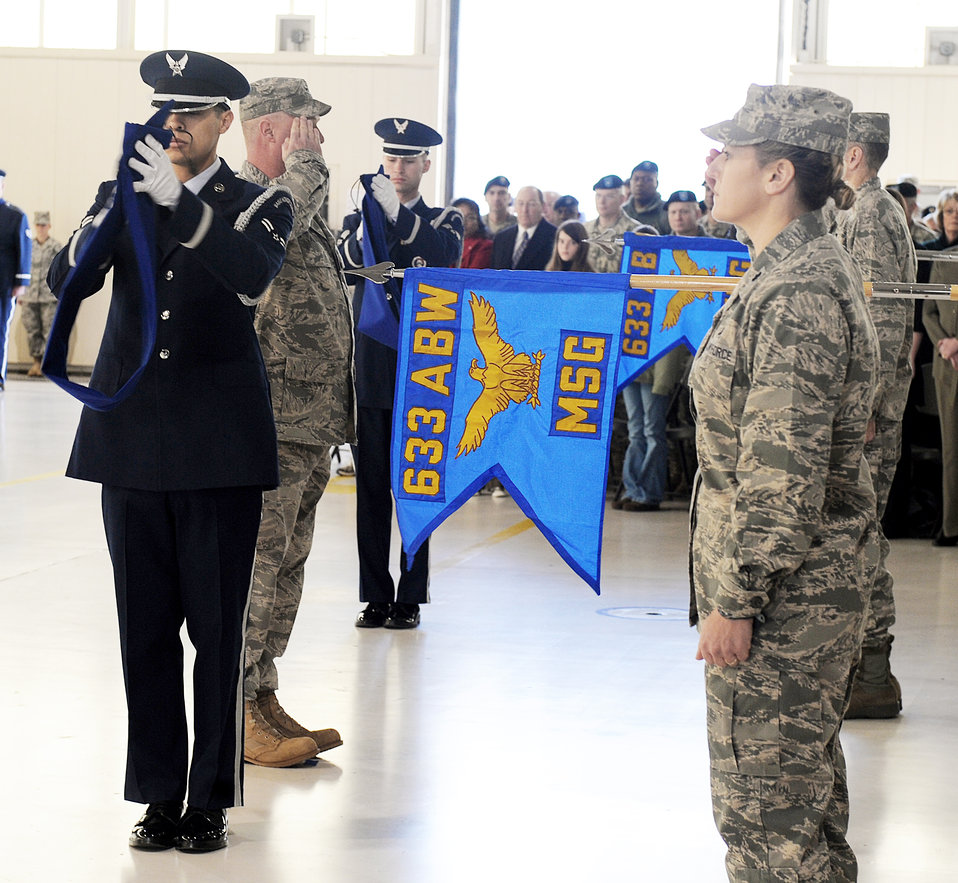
New era begins for Joint Base Langley-Eustis

The 633rd Medical Group and the 633rd Mission Support Group receive their new guidons during the 633rd Air Base Wing activation and change-of-command ceremony Jan. 7, 2010, at Joint Base Langley-Eustis Va. The activation of the 633rd ABW is the first step in fulfilling Congress' 2005 Base Realignment and Closure decision that forms Joint Base Langley-Eustis later this month.